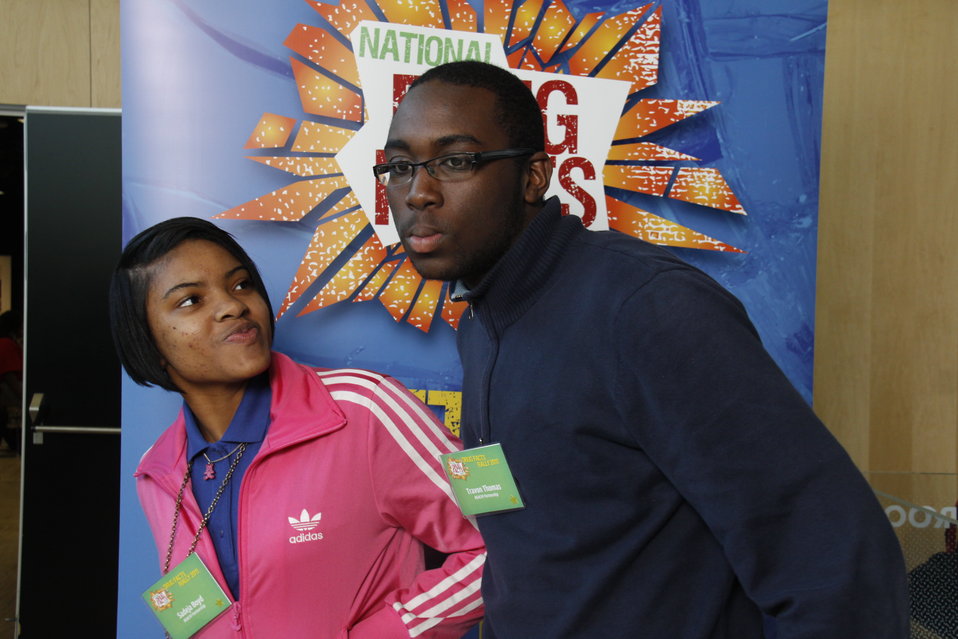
NDFW Mentor Event